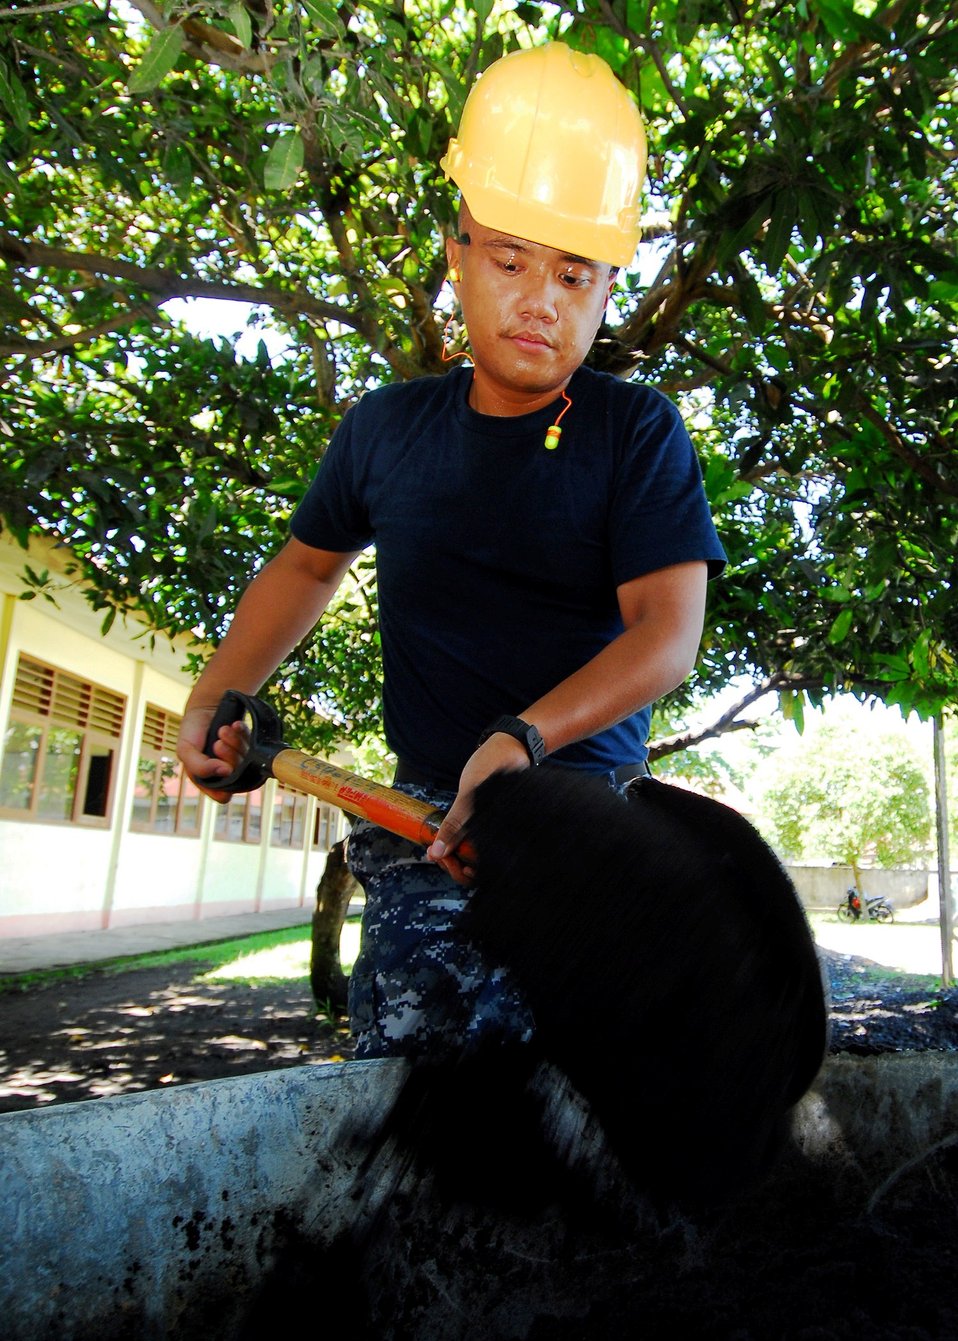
Hospital Corpsman 3rd Class Norman Dalisay Shovels a Load of Dirt

Hospital Corpsman 3rd Class Norman Dalisay, currently embarked aboard the Military Sealift Command hospital ship USNS Mercy (T-AH 19), shovels a load of dirt during an engineering civic action program in Tobelo, Indonesia, on July 14, 2010. USNS Mercy (T-AH 19) is in the North Maluku Islands conducting Pacific Partnership 2010, the fifth in a series of annual U.S. Pacific Fleet endeavors conducted in Indonesia as a disaster relief exercise to strengthen regional partnerships.